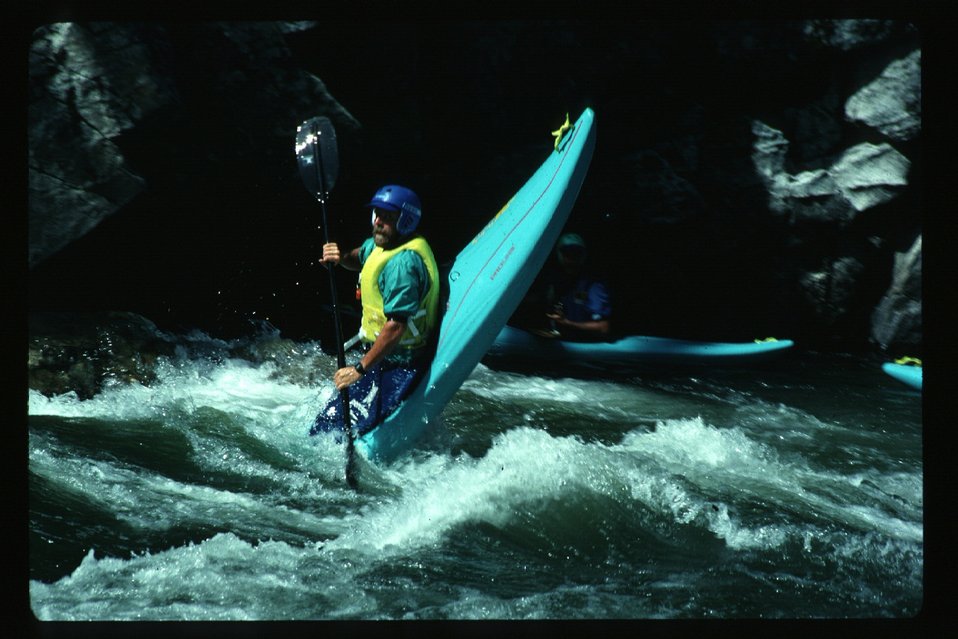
Bruneau River Kayaker in white water Kayaking Four Rivers Field Office LSRD Lower Snake River District